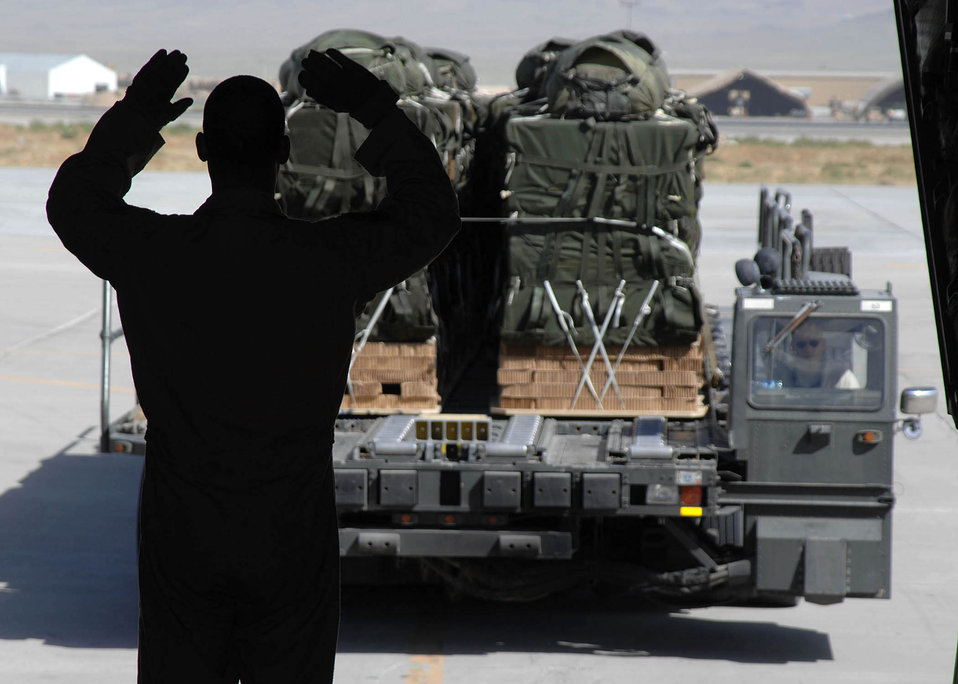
C-130s put troops, supplies on target in Afghanistan

Tech. Sgt. Brad Simms guides a K-loader to the ramp of a C-130 Hercules to unload airdrop bundles being transported to troops in the field at Bagram Air Base, Afghanistan. Sergeant Simms is a joint airdrop inspector with the 774th Expeditionary Airlift Squadron.